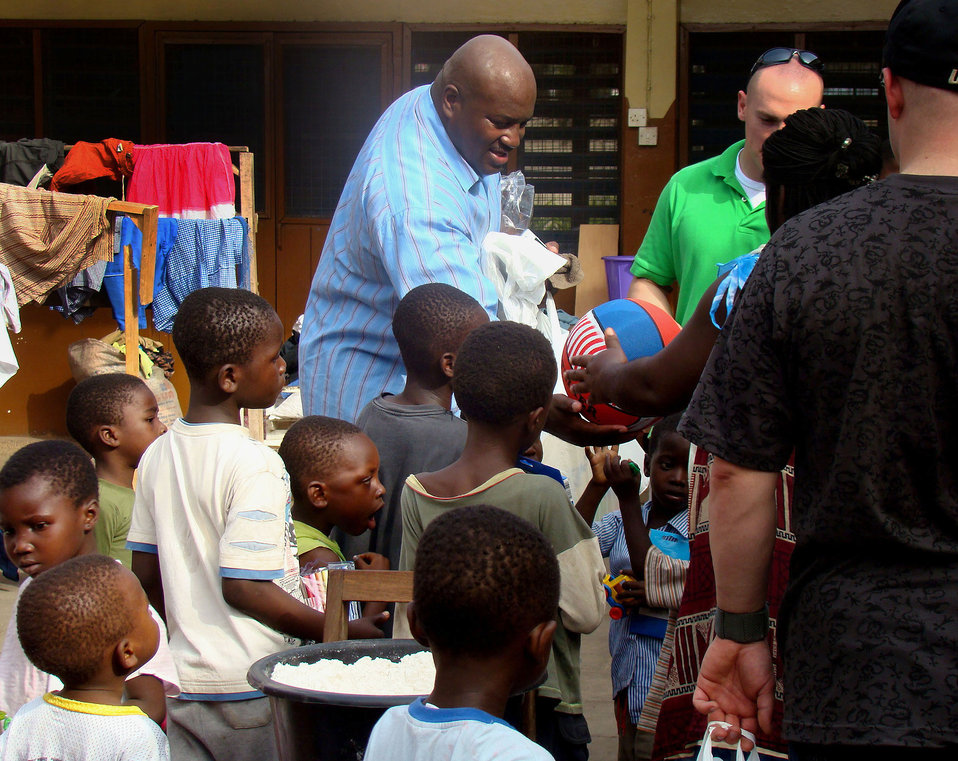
Airmen reach out to orphans in Africa

Master Sgt. Kevin Coleman hands out toys to orphaned children at the Osu Children's Home Feb. 18 in Accra, Ghana. Twenty-five Airmen visited the home to hand out more than $500 worth of supplies they purchased through personal donations. The Airmen are part of a joint task force providing infrastructure, aircraft and personnel in support of President George Bush's visits to Benin, Tanzania, Rwanda, Ghana and Liberia Feb. 16 through 21. Sergeant Coleman is a Joint Task Force West weather craftsman.